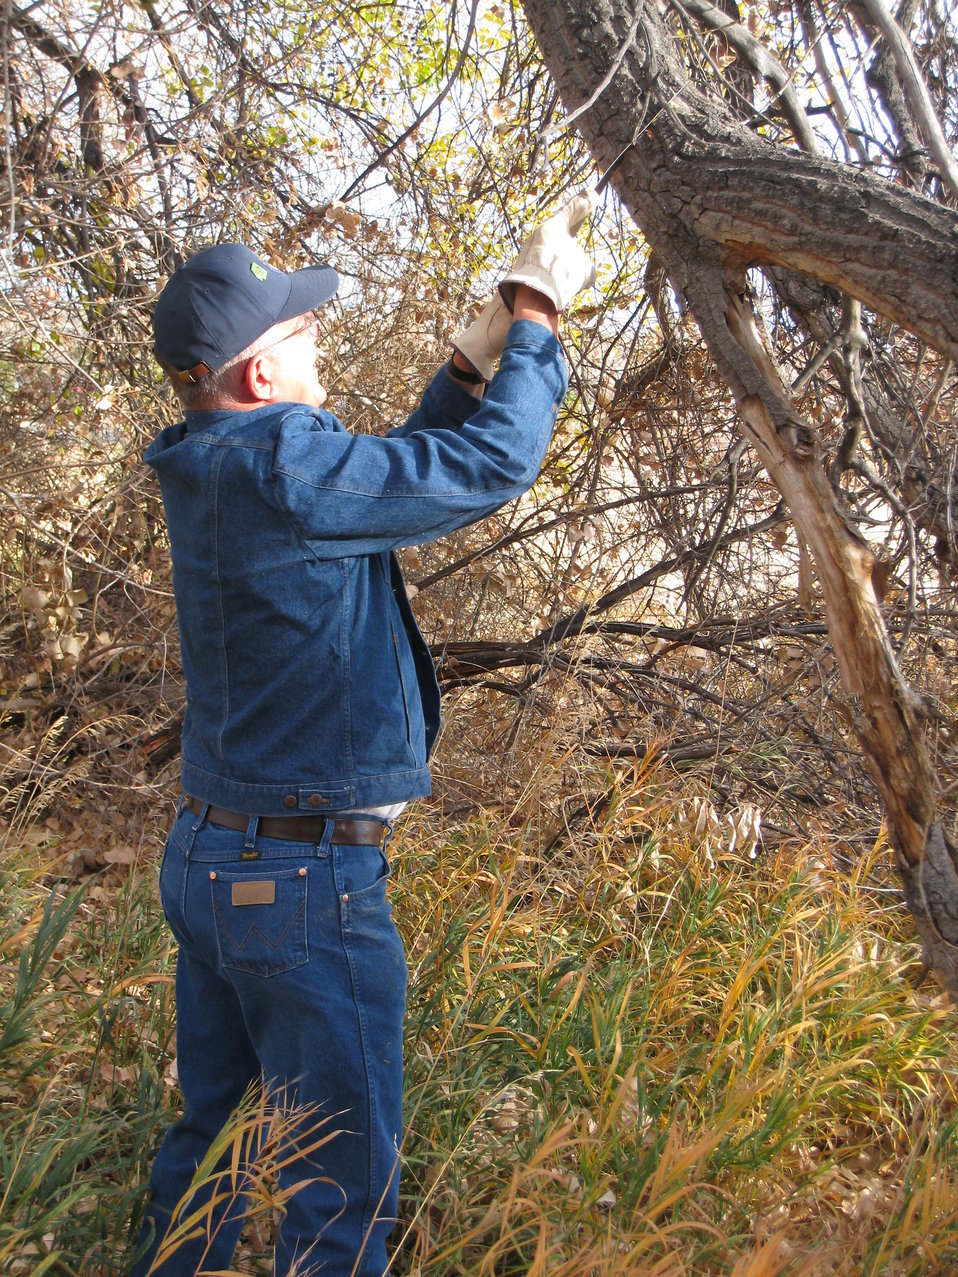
Two Ponds Tuesday